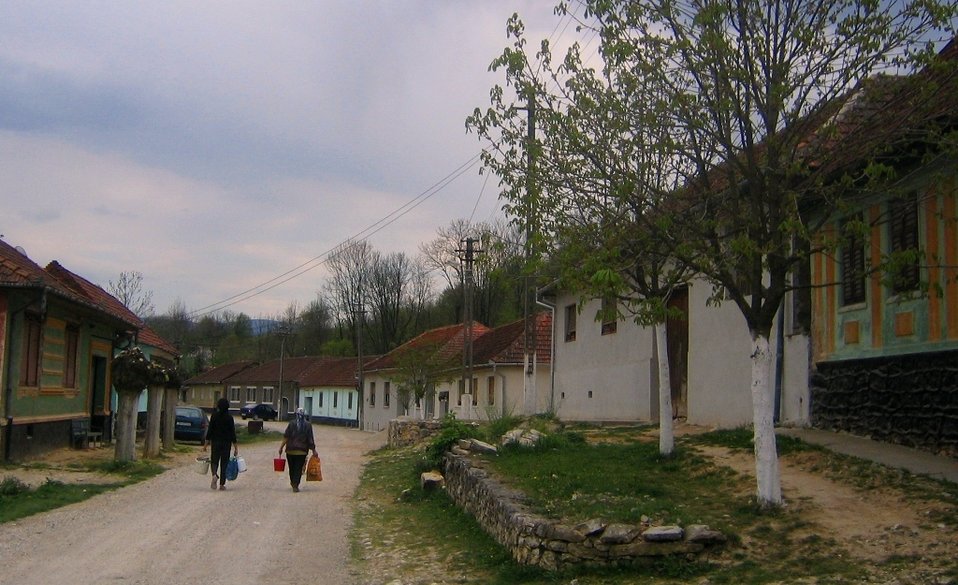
Română: no original description